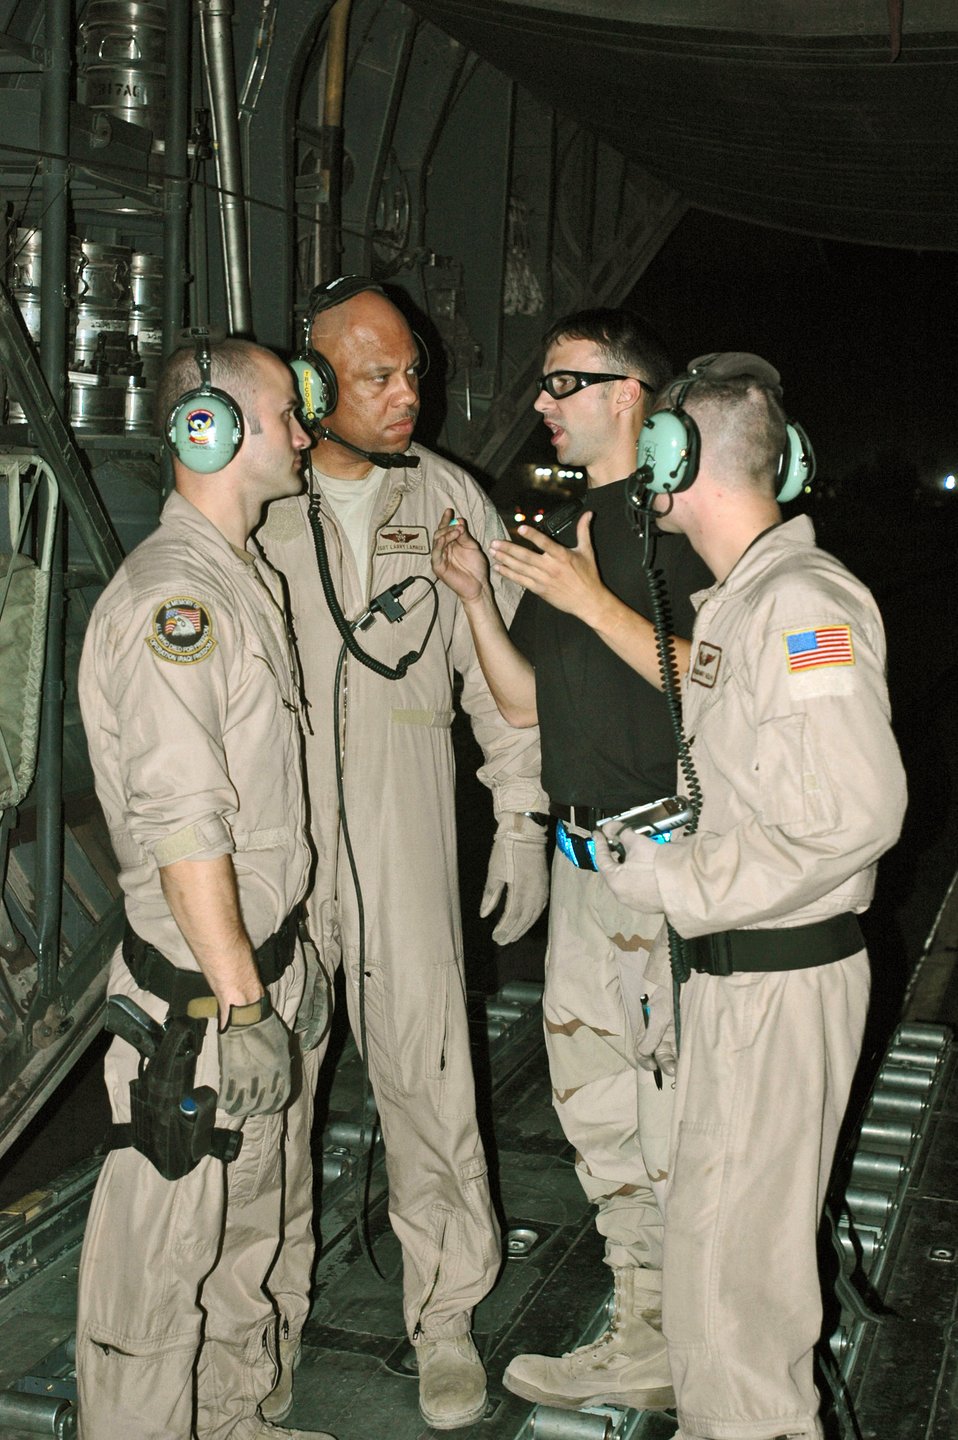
Loadmasters: night life of C-130 mission hackers

Staff Sgt. Tommy Greeness (left to right in flightsuits), Master Sgt. Larry Lambert and Airman 1st Class Zachary Kelhi are briefed by an Airman from the air terminal at Balad Air Base, Iraq, about the type of cargo they would be taking to Baghdad International Airport. The three loadmasters from the 746th Expeditionary Airlift Squadron must configure the cargo area of their C-130 Hercules based on the size, amount and type of cargo to be carried.